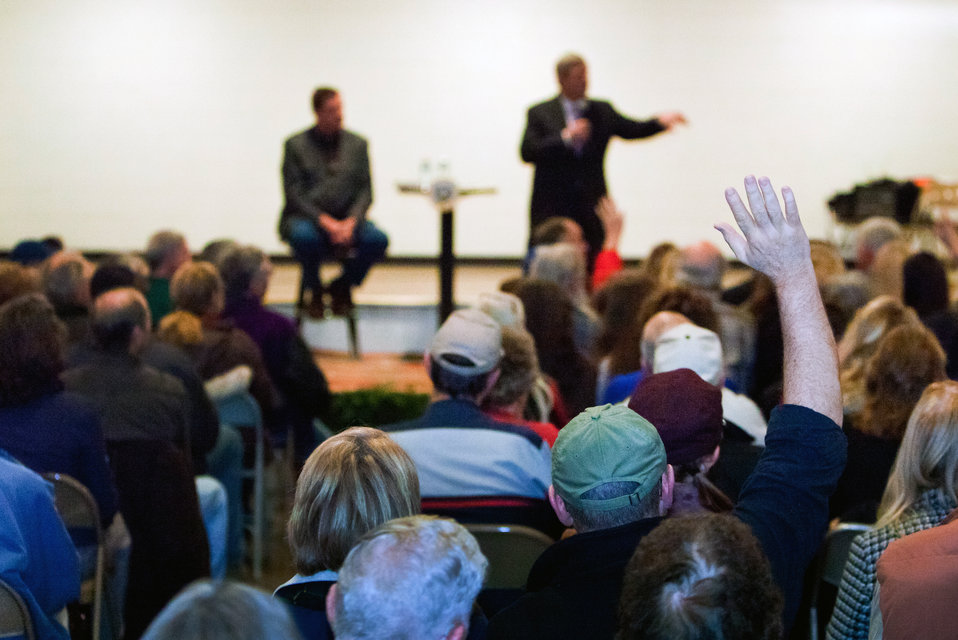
A member of the audience raises his hand while Agriculture Secretary Tom Vilsack responds to questions at a community forum in Weaverville, CA on Dec. 10, 2012.